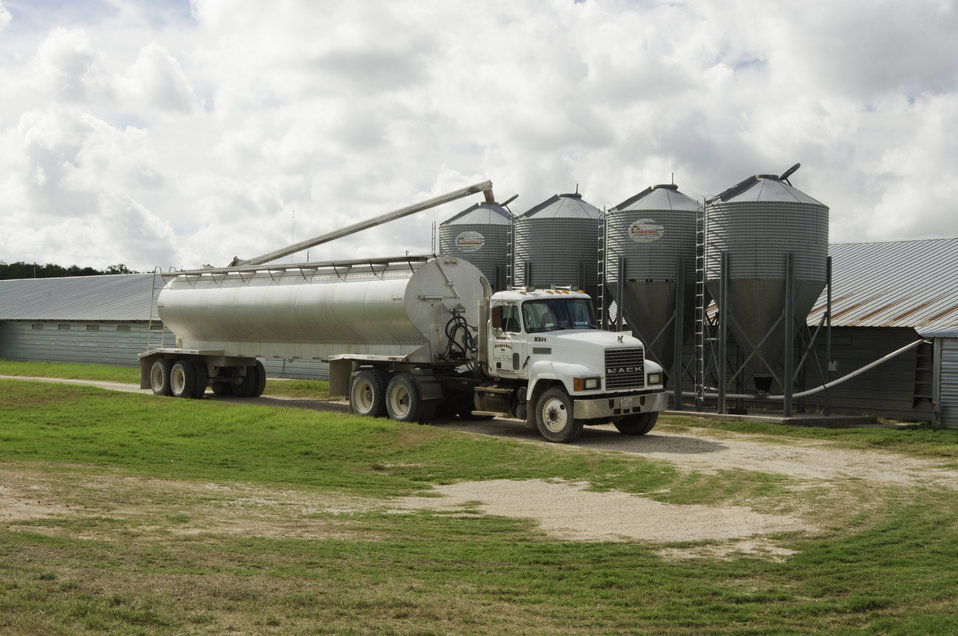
Grain is delivered to the Bobby Morgan poultry farm in Luling, TX on Aug. 23, 2013.